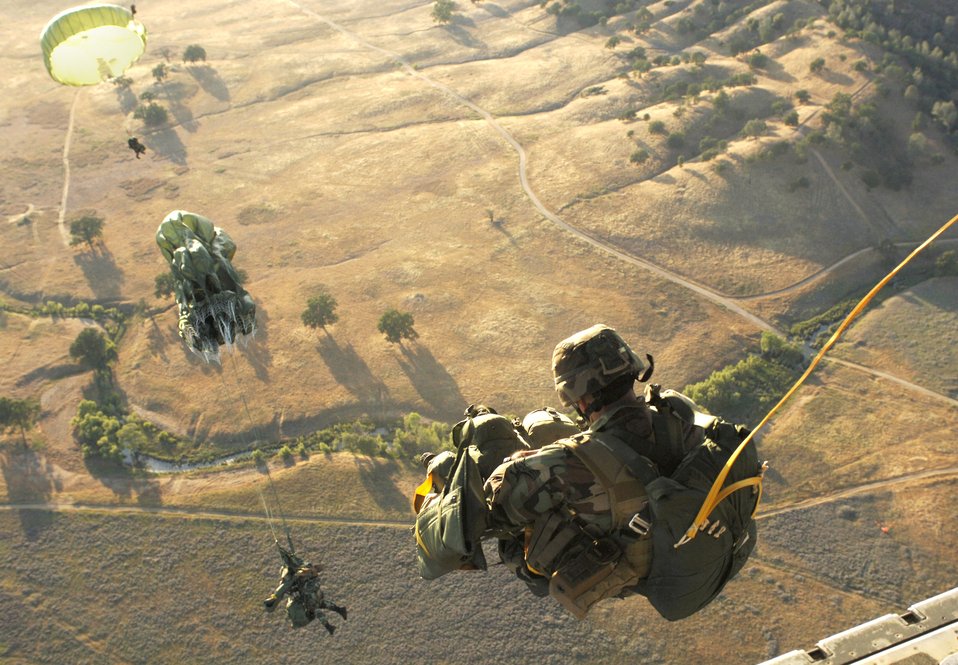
Getting a jump on things

Airmen jump from a C-130 Hercules June 2 during an airdrop in support of Operation Hydra, a weeklong exercise. The exercise was held to test the 615th Contingency Response Wing's ability to conduct expeditionary mobility operations at three locations.